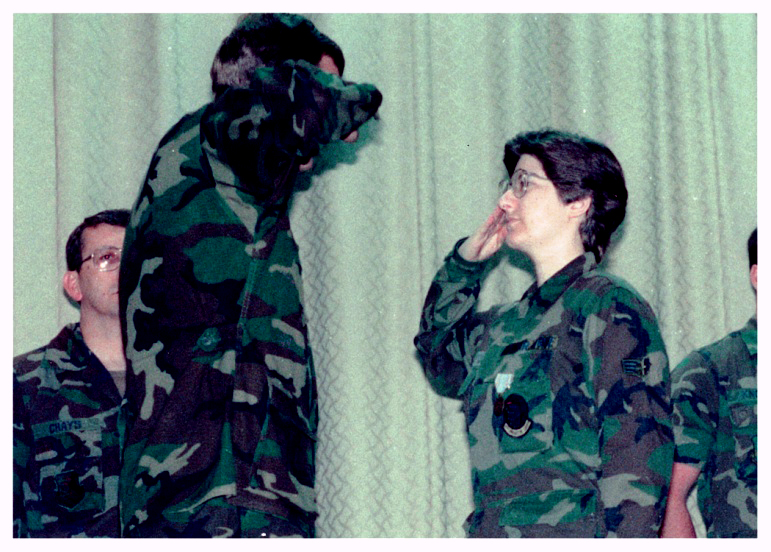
Liz Landrum works for the Service as a biologist. She served in the Air Force from 1988 to 1992 as a mainframe computer operator at Eaker AFB, Arkansas.